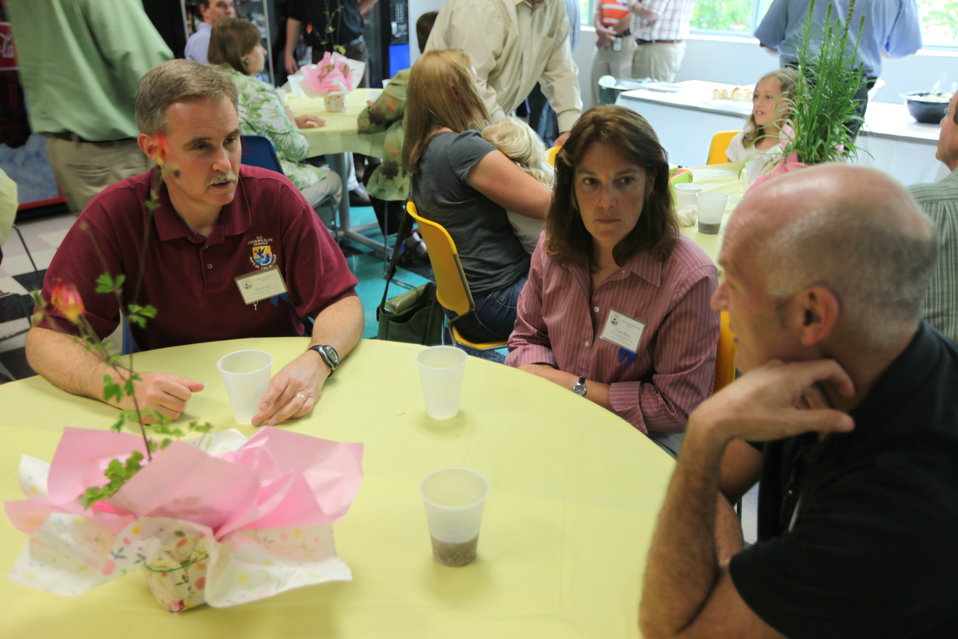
Northeast Region Employee Appreciation Awards

Luncheon